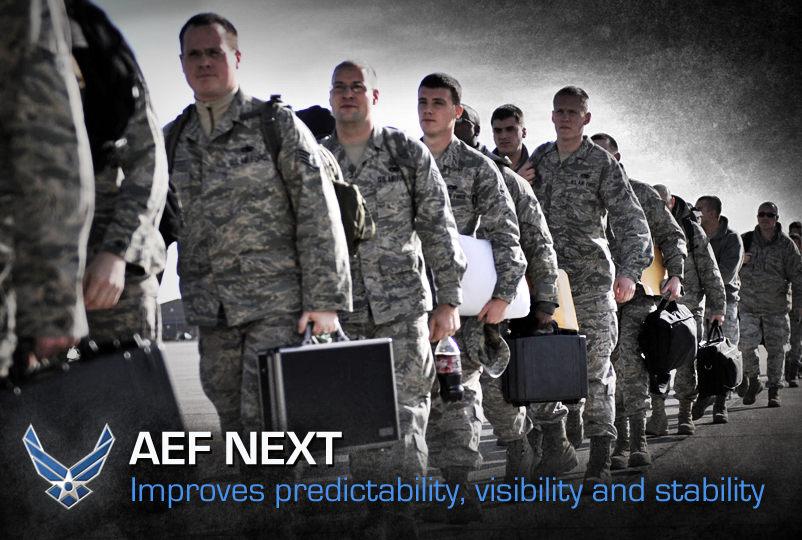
AEF Next